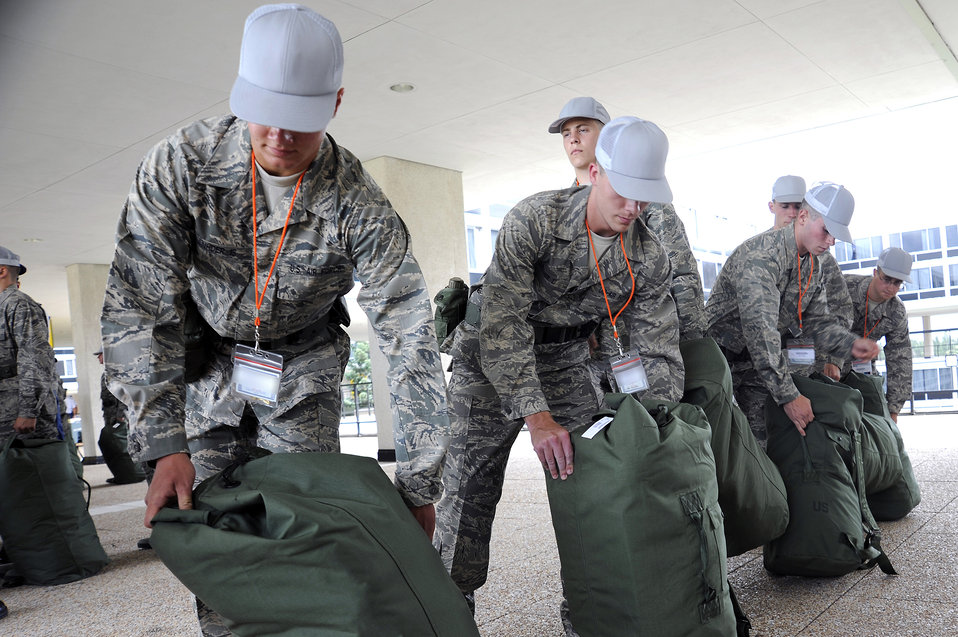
Academy Class of 2013 learns basics

Basic cadets pack issued equipment into duffelbags during Class of 2013 cadet inprocessing June 25 at the U.S. Air Force Academy in Colorado Springs, Colo. Issue items include airman battle uniforms and physical training uniforms.